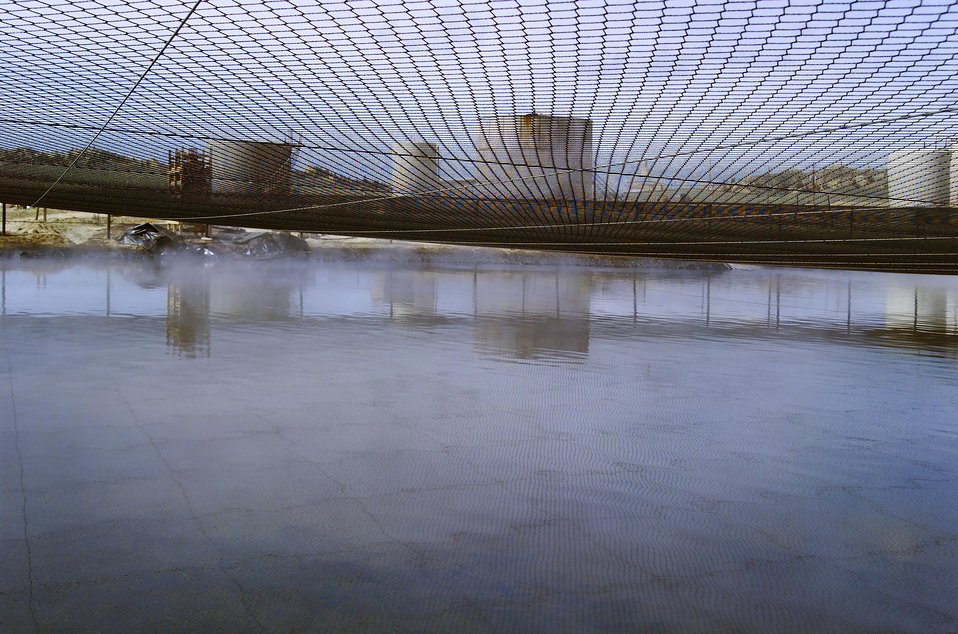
Tank batteries are reflected in one of a series of cooling ponds at Naval Petroleum Reserve No. 3 (NPR-3) near Casper, Wyoming.

The Rocky Mountain Oilfield Testing Center (RMOTC) is a Department of Energy field test site for emerging and developing technologies to address critical energy issues. The field test site, located on Naval Petroleum Reserve No.3 (NPR-3), is a 10,000-acre site. There are approximately 700 well bores with 600 producing wells ranging in depth from 500 to 5,000 feet.